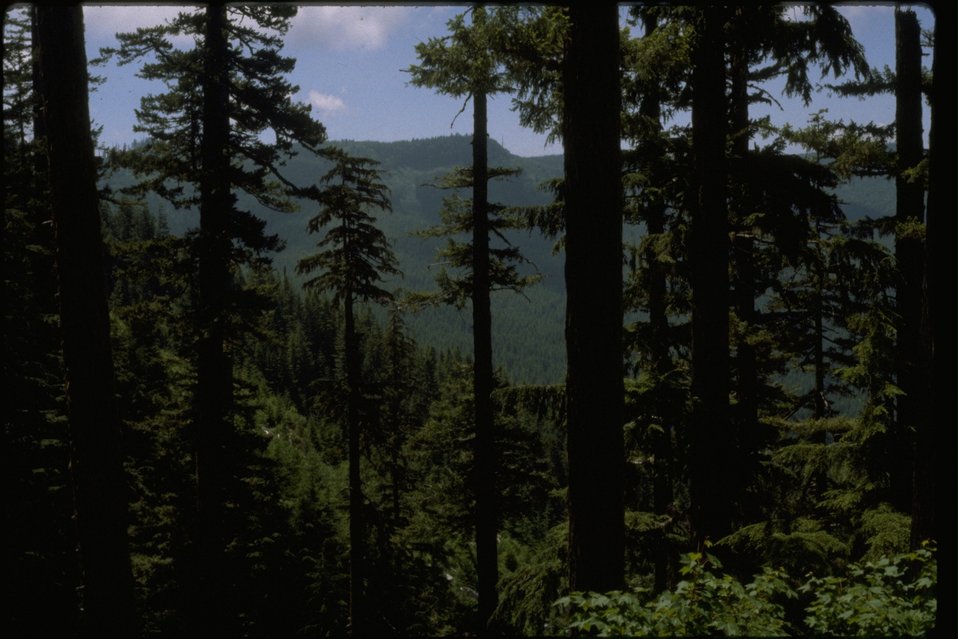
A section of old growth in the Cascade region.